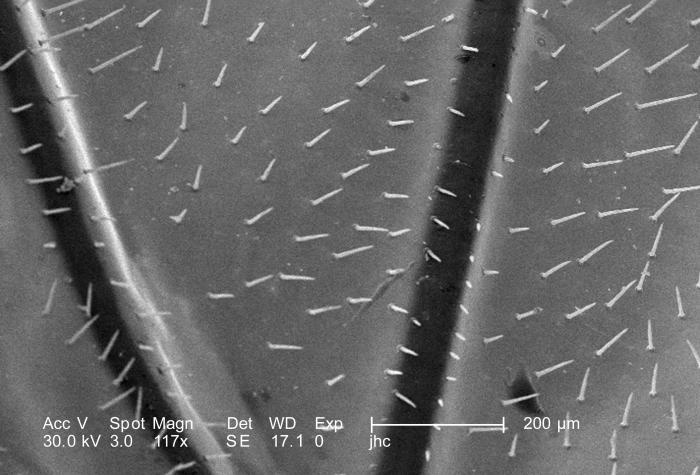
Under a magnification of 117X, four time greater than PHIL 10112, this scanning electron micrograph (SEM) depicted some of the surface details found on one of the four wings on this unidentified hornet discovered in the suburbs of Decatur, Georgia. In this particular view, you'll note that the wing's surface is coated with what appears to be numerous 'hairs', which are known as 'setae'. These setae are not keratin-based mammalian hairs, but are composed of chitin, as is its exoskeleton.